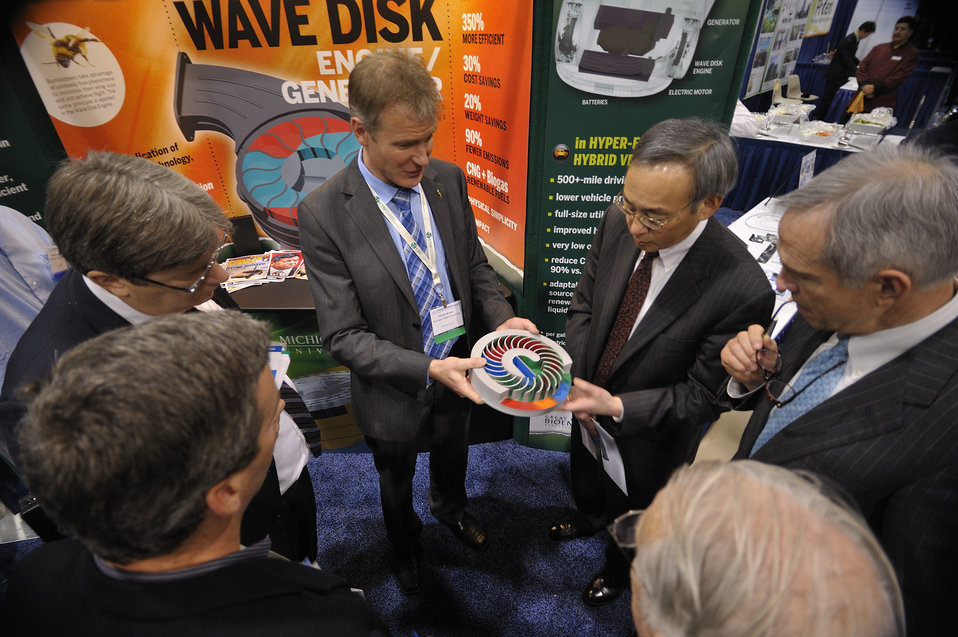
ARPA-E Energy Innovation Summit 2011, 55 of 83

Steven Chu, Secretary, United States Department of Energy holds a model of the wave disk engine at the summit's Technology Showcase.